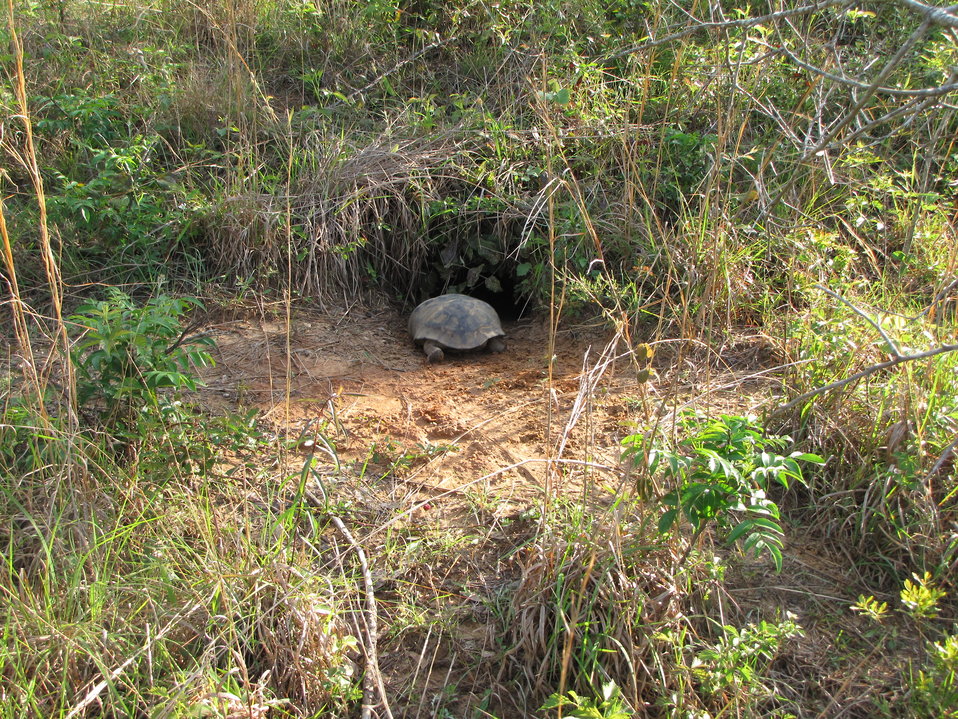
Time for bed!

A gopher tortoise heads home. More than 300 species of vertebrates and arthropods share the holes burrowed by these long-lived creatures, including the eastern diamondback rattlesnake and gopher frog.